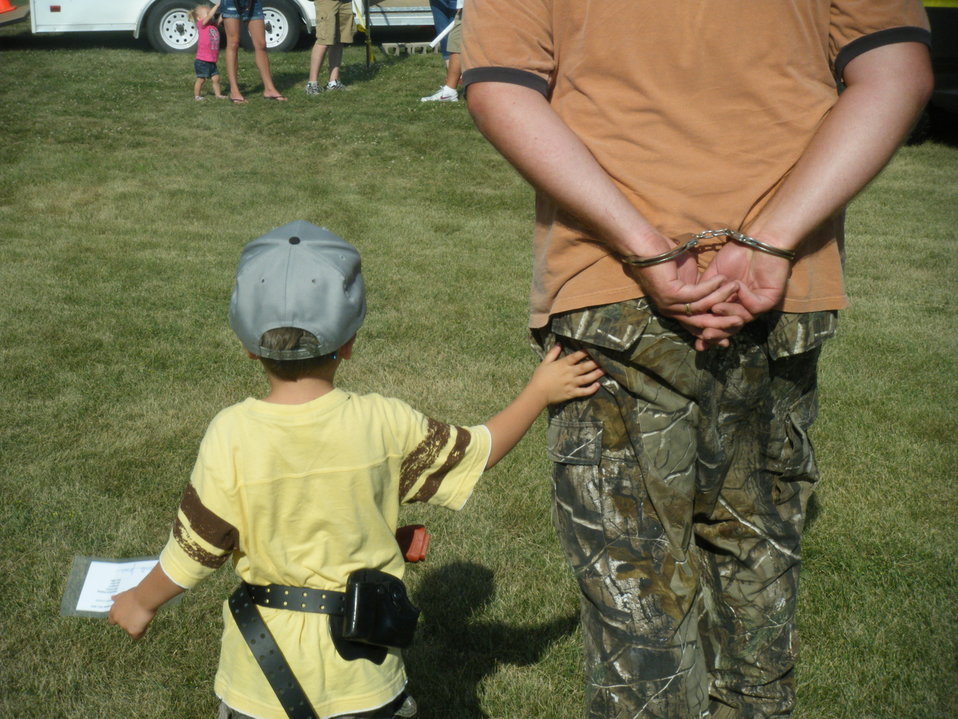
2011 Greenwing Day - Game Warden scenario session

Des Lacs National Wildlife Refuge, Tasker's Coulee

BUSTED! :)